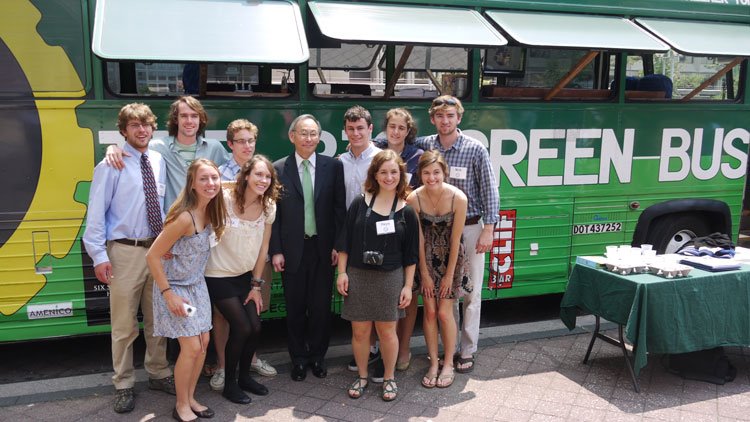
The Big Green Bus Visits the Energy Department

The Big Green Bus visited the Energy Department and Secretary Chu this Tuesday. Ten Dartmouth students are touring the nation on the Big Green Bus to build enthusiasm for community involvement through environmental action. This is the 8th year this completely student run initiative has hit the road to travel 12,000 miles across 24 states on a reused, veggie-powered Greyhound bus. | Photo by Justin Vandenbroeck, Energy Department.

Photo of the Week: June 22, 2012